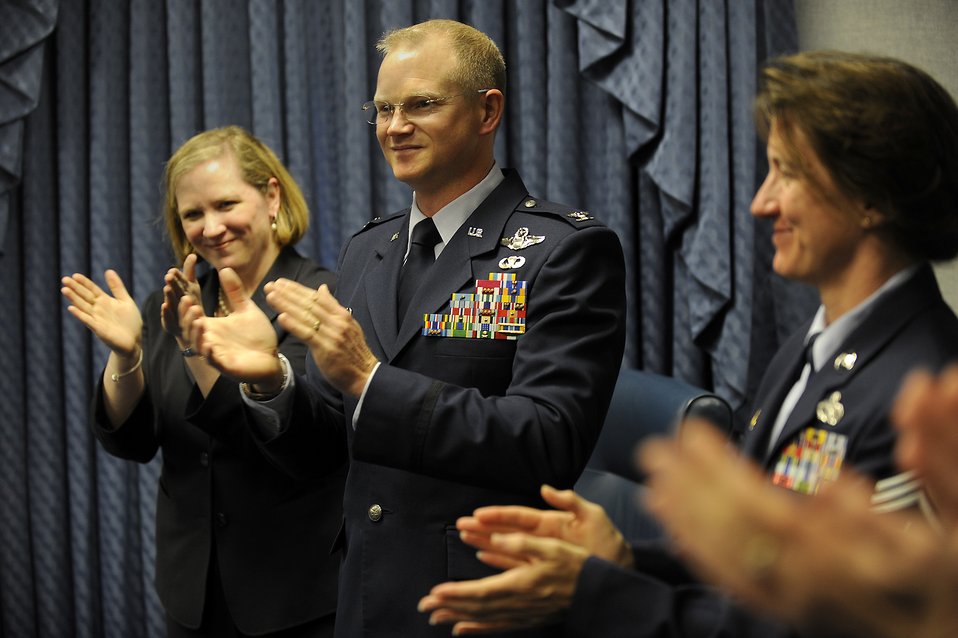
Installation Excellence Award

Undersecretary of the Air Force Erin Conaton; Col. Christopher Weggeman, the commander of the 52nd Fighter Wing at Spangdahlem Air Base, Germany; and Chief Master Sgt. Sandra Miller, the 52nd FW command chief, celebrate the wing's recognition as the recipient of the 2011 Commander in Chief's Installation Excellence Award May 3, 2011, during a ceremony in the Pentagon,.